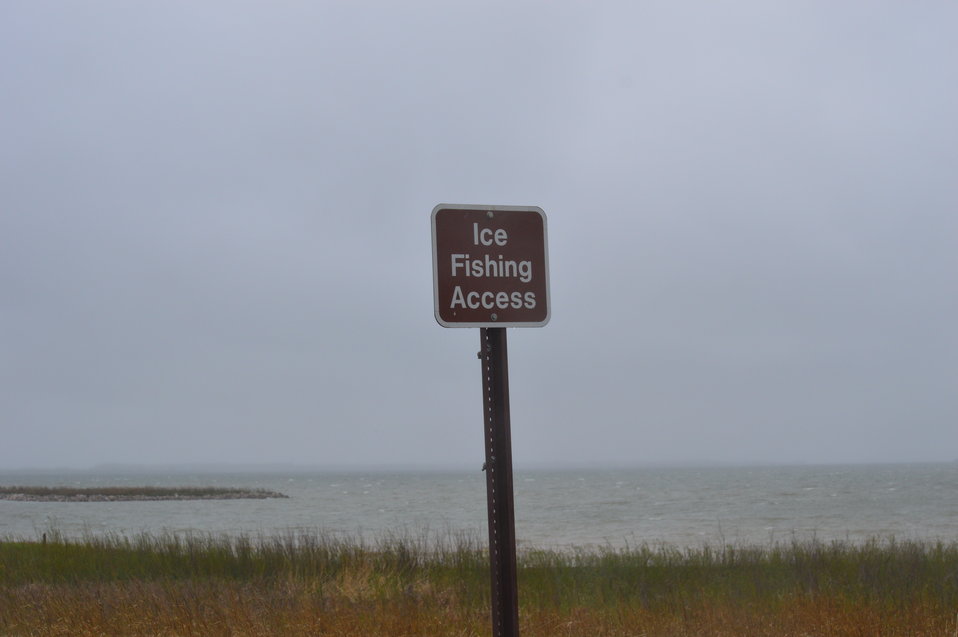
'Ice Fishing Access' sign

Scenery and wildlife and Audubon National Wildlife Refuge in North Dakota.